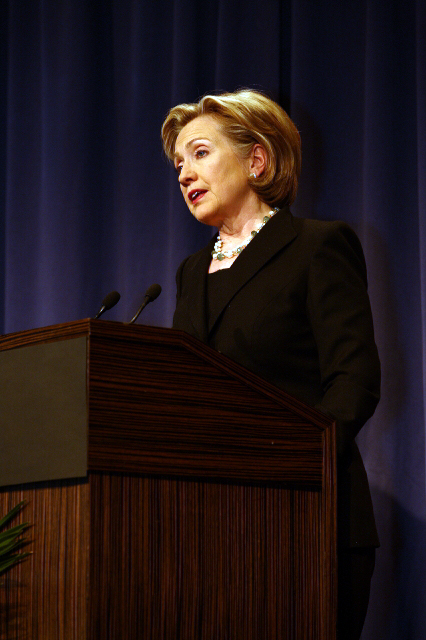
Press Conference With Russian Foreign Minister

Press conference after dinner meeting between U.S. Secretary of State Hillary Rodham Clinton and Russian Foreign Minister Sergey Lavrov in Geneva, Switzerland March 6, 2009.